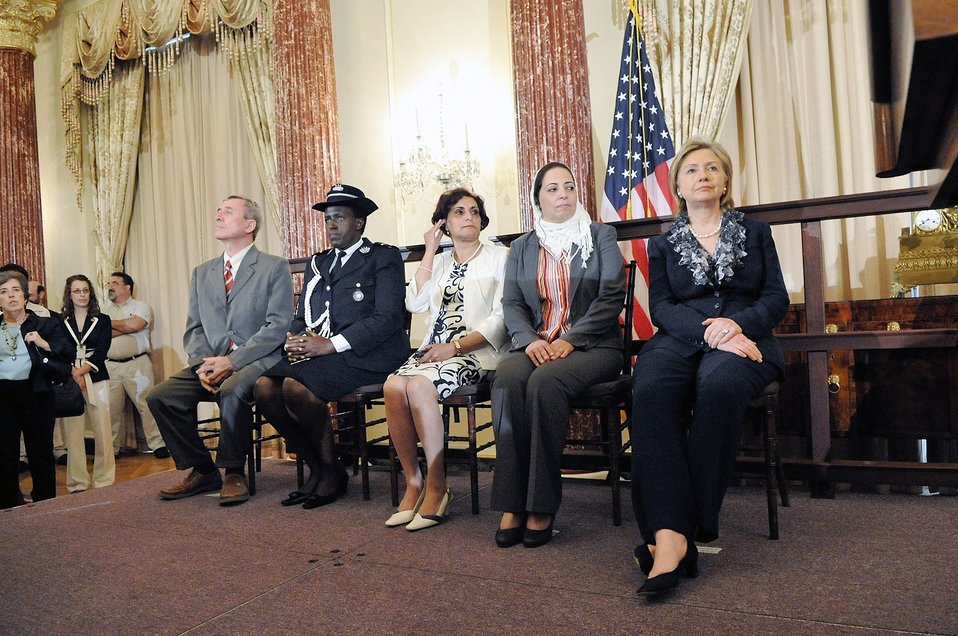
Secretary Clinton With TIP Honorees

U.S. Secretary of State Hillary Rodham Clinton watches Ambassador CdeBaca honor those individuals sitting beside her who have devoted their lives to the fight against human trafficking. The honorees attended the ceremony for the release of the 2010 Trafficking in Persons Report at the U.S. Department of State in Washington, D.C., on June 14, 2010.